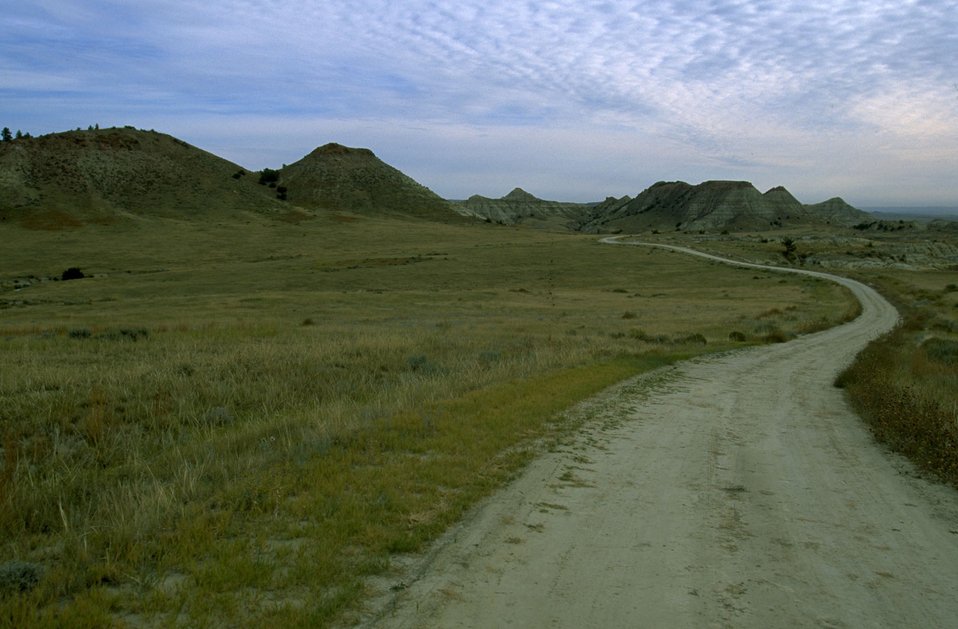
Access road to the Terry Badlands Scenic Overlook